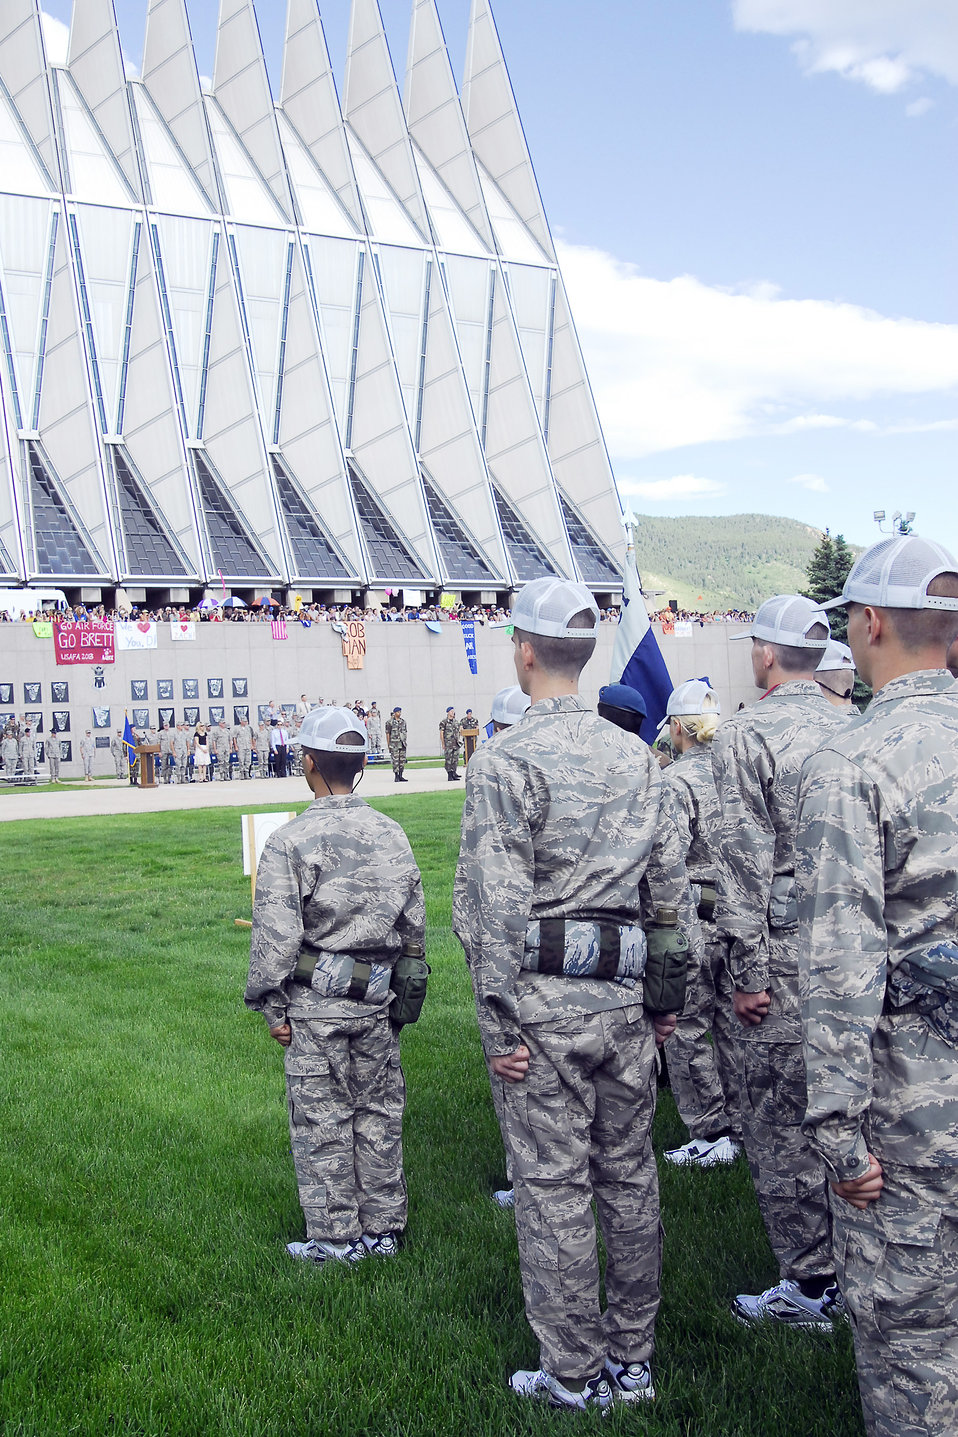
Welcome to the Academy

The Class of 2013 stand in formation during the Oath of Allegiance Ceremony June 25 at the U.S. Air Force Academy in Colorado Springs, Colo. Approximately 1,400 cadets were selected for the Class of 2013 out of nearly 10,000 applicants.